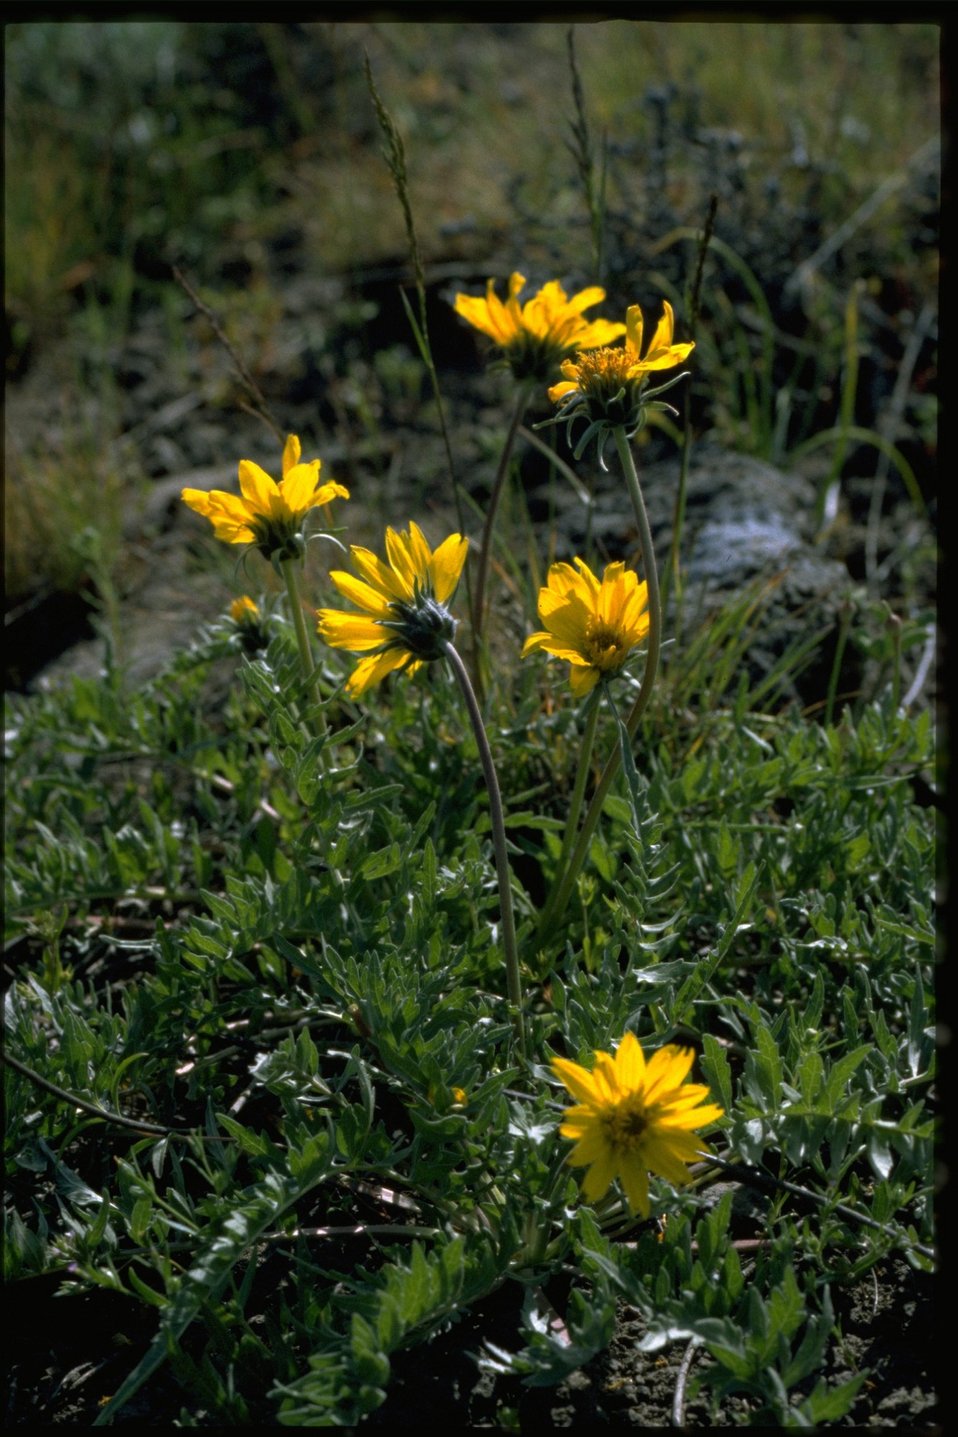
Medium shot of Hooker's Balsamroot wildflower (Balsamorhiza Hookeri).